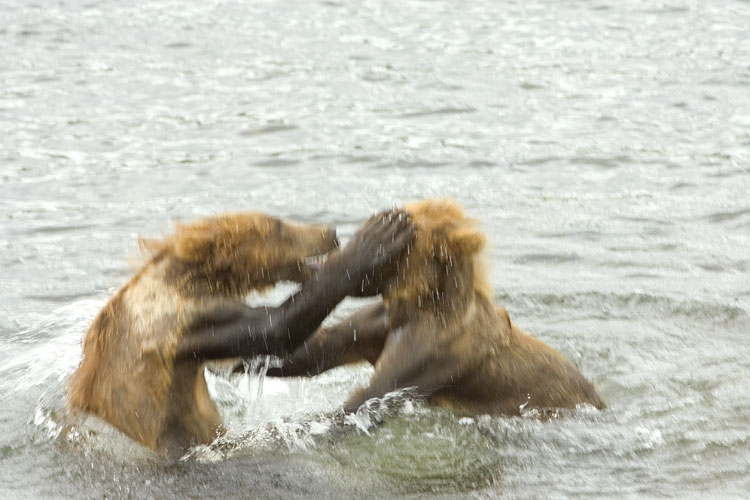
KOD Hildebrand (9)

Kodiak National Wildlife Refuge- Wildlife